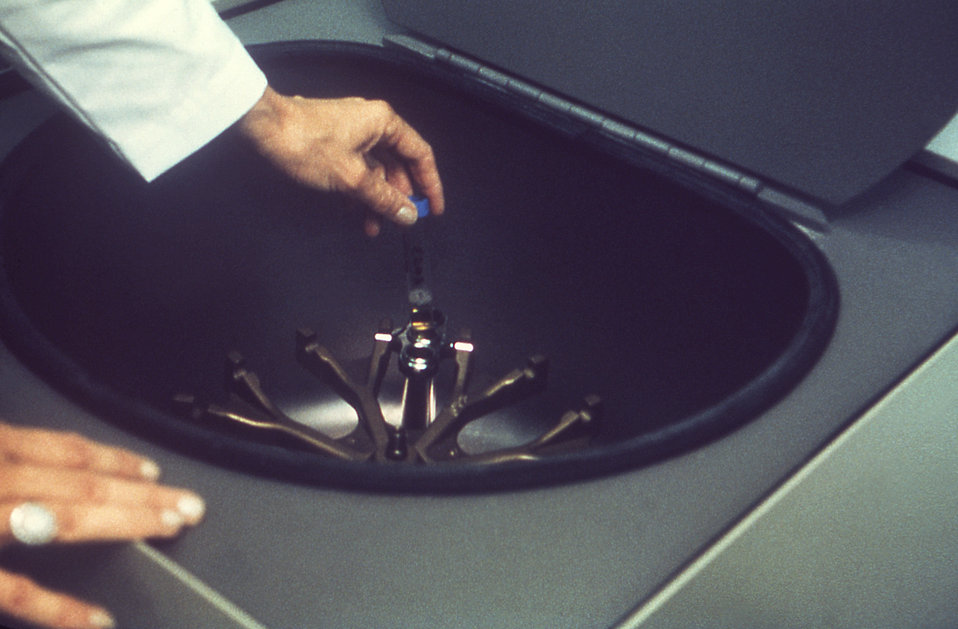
This image depicts the left hand of a laboratorian placing a single 15ml conical-based centrifuge tube into the tube holder of the centrifuge's rotor.